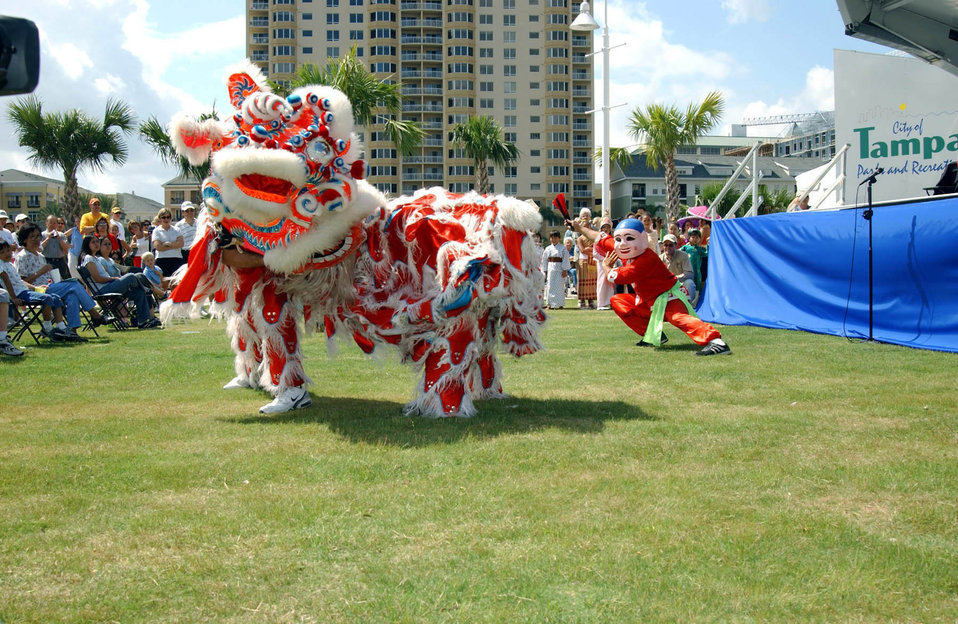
Asia Fest

TAMPA, Fla. -- A dragon team performs a ritual dance during the city's Asia Fest on May 1.